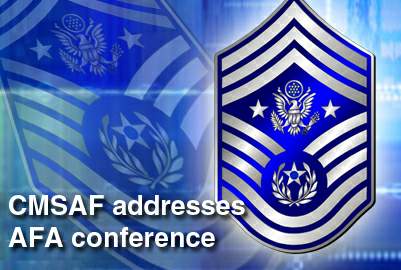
CMSAF talks integrity, family and training

Chief Master Sgt. of the Air Force James A. Roy praised the enlisted force and highlighted several of his key priorities during a speech at the 2009 Air Force Sergeants Association Professional Airmen's Conference in Atlanta.